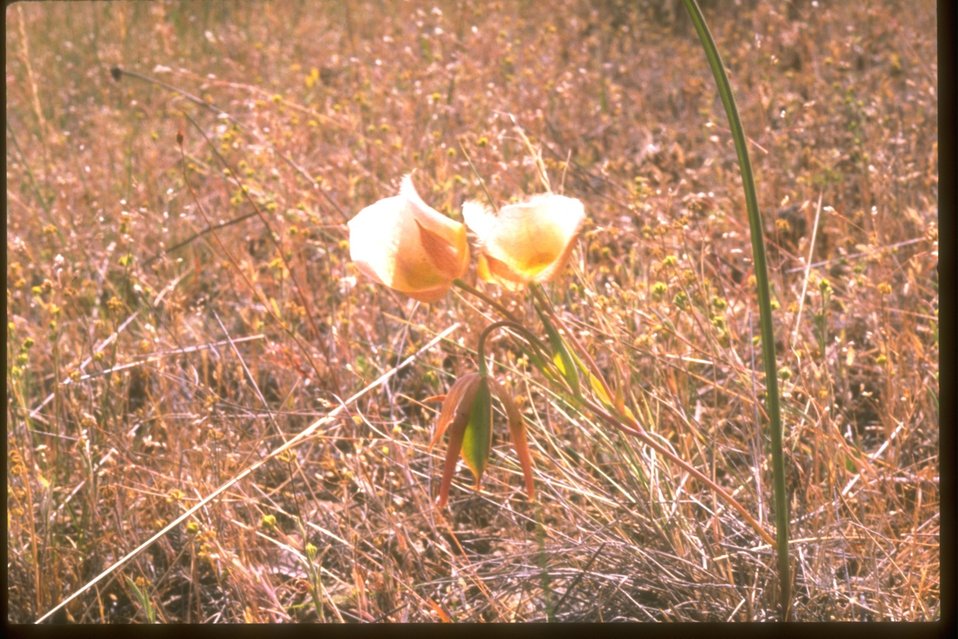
Crinite Mariposa Lily.